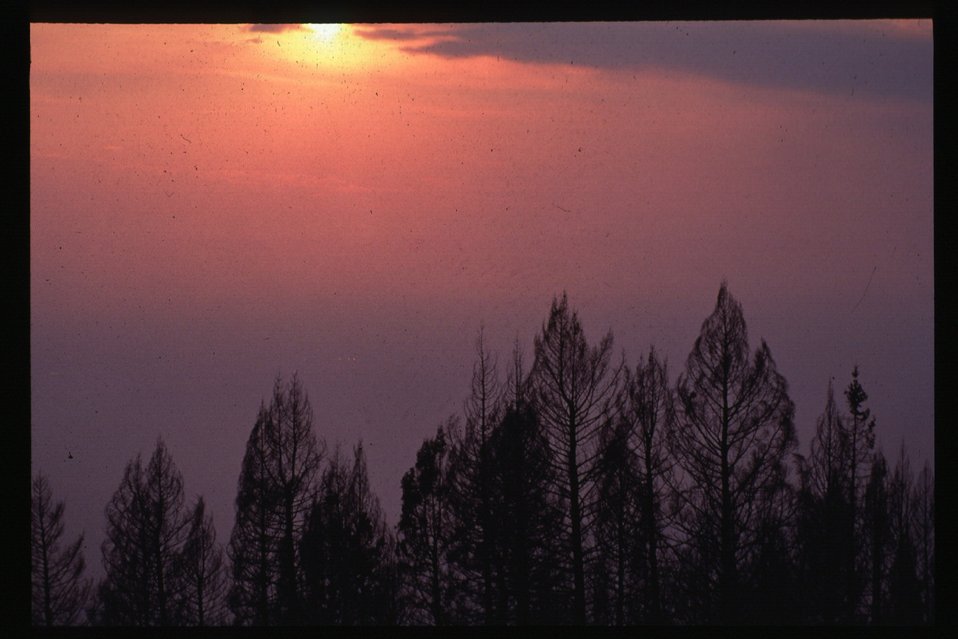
8th Street Fire Burnt trees Four Rivers Field Office LSRD Lower Snake River District